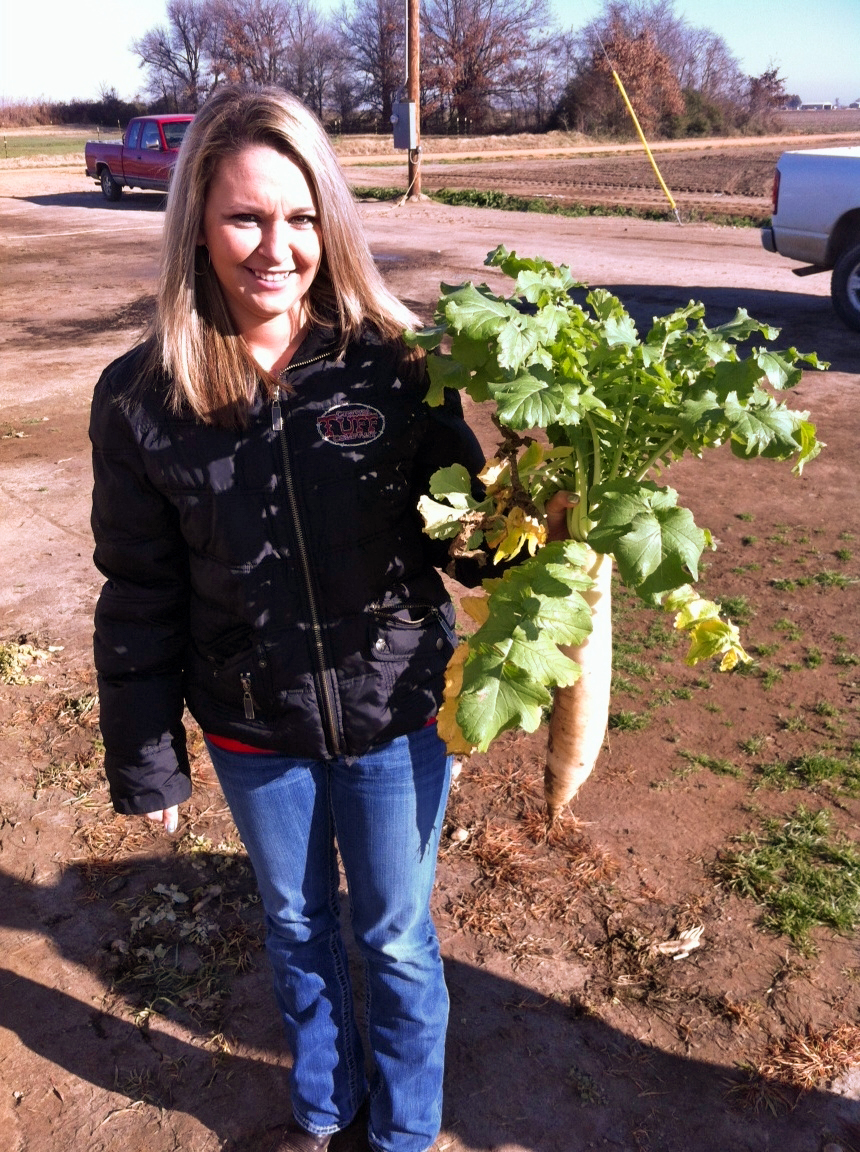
Carroll-a

Arkansas State University student Amanda Carrell holds a deep tillage radish, which is used as a conservation cover crop on an Arkansas farm on Dec. 12, 2012. The radishes help break up soil compaction and increases water infiltration. Carrell has been working with the U.S. Department of Agriculture’s (USDA) Natural Resources Conservation Service (NRCS) Earth Team program since last year and has received the 2012 Earth Team volunteer award for Arkansas and in 2013 was awarded the National Volunteer Award.